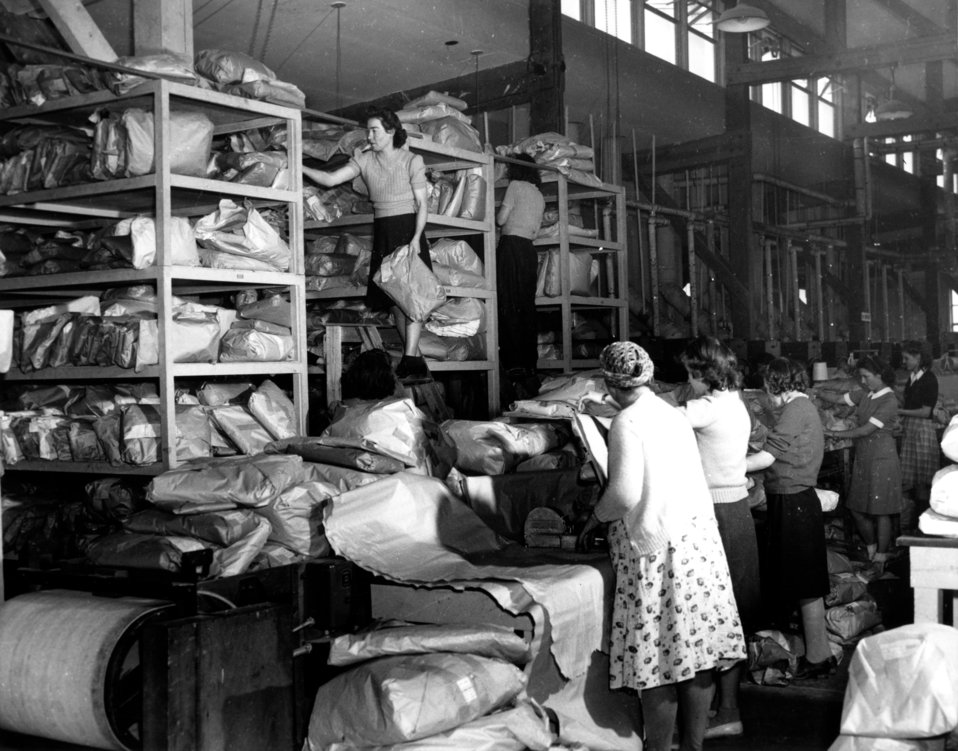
Business activity at Oak Ridge